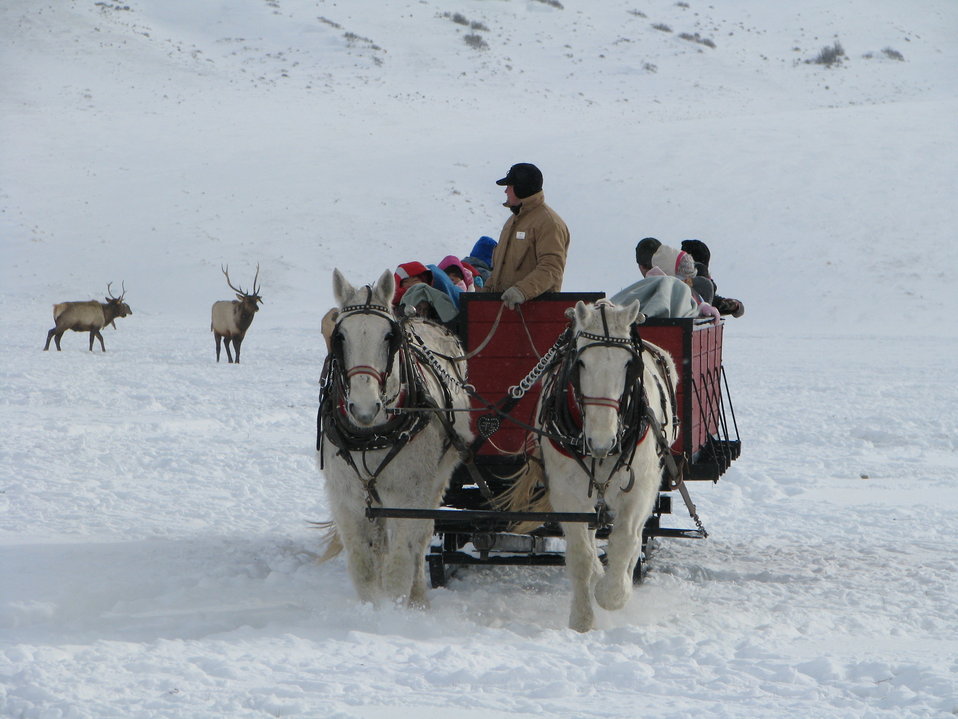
Leaving the Herd

A sleigh ride leaves a group of herd, with only two bull elk remaining in the image.